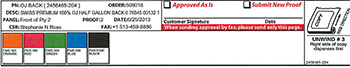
RECALLED – Orange Juice

March 3, 2014 – Product Recall – Lehigh Valley Dairy Conducts Voluntary Recall of Lehigh Valley, Swiss Premium, and Price Chopper Brand Orange Juice Because It May Contain Undeclared Allergen (Milk).